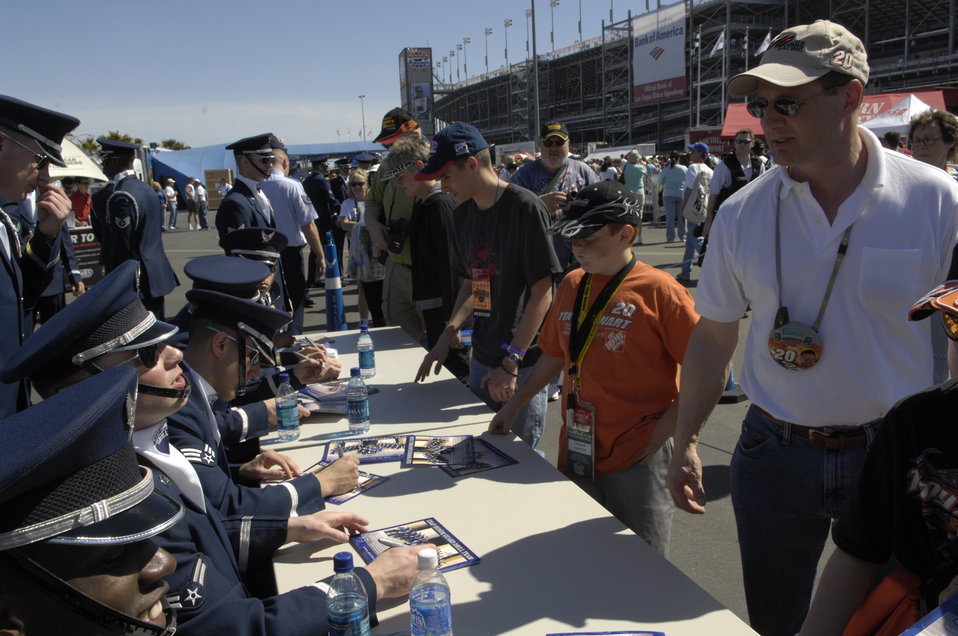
Drill Team performs at Busch Series Race

The United States Air Force Honor Guard Drill Team autographs AF recruiting posters after their performance at the Las Vegas Motor Speedway, Las Vegas, Nev., March 10, 2007. The Drill Team is the traveling component of the Air Force Honor Guard and tours Air Force bases world wide showcasing the precision of today's Air Force to recruit, retain, and inspire Airmen for the Air Force mission.